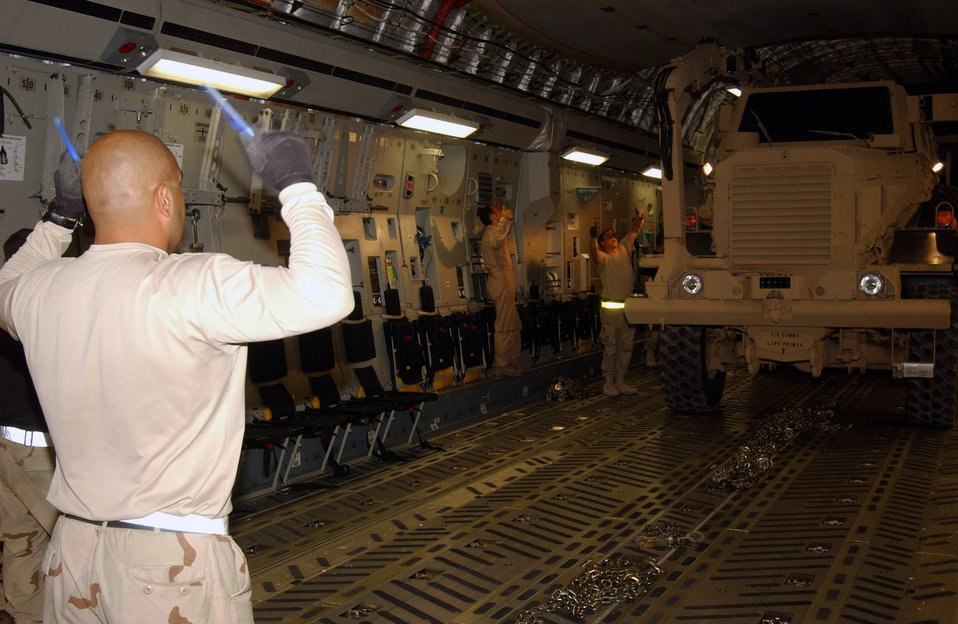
Deployed Airmen load, help deliver new 'Buffaloes'

Staff Sgt. Edgar Perez marshals a Mine Resistance Ambush Protected vehicle into a C-17 Globemaster III Aug. 25 at Al Asad Air Base, Iraq. The new MRAP Category III Buffalo model, which weigh about 50,000 pounds each, will phase out the High Mobility Multipurpose Wheeled Vehicles, also known as Humvees. MRAPs are designed to reduce servicemembers' casualties by protecting them from improvised explosive devices, and to increase their mobility and enhance mission success throughout the areas of responsibility. Sergeant Perez is an aerial transportation specialist with 438th Aerial Port Flight deployed from Pope Air Force Base, N.C.